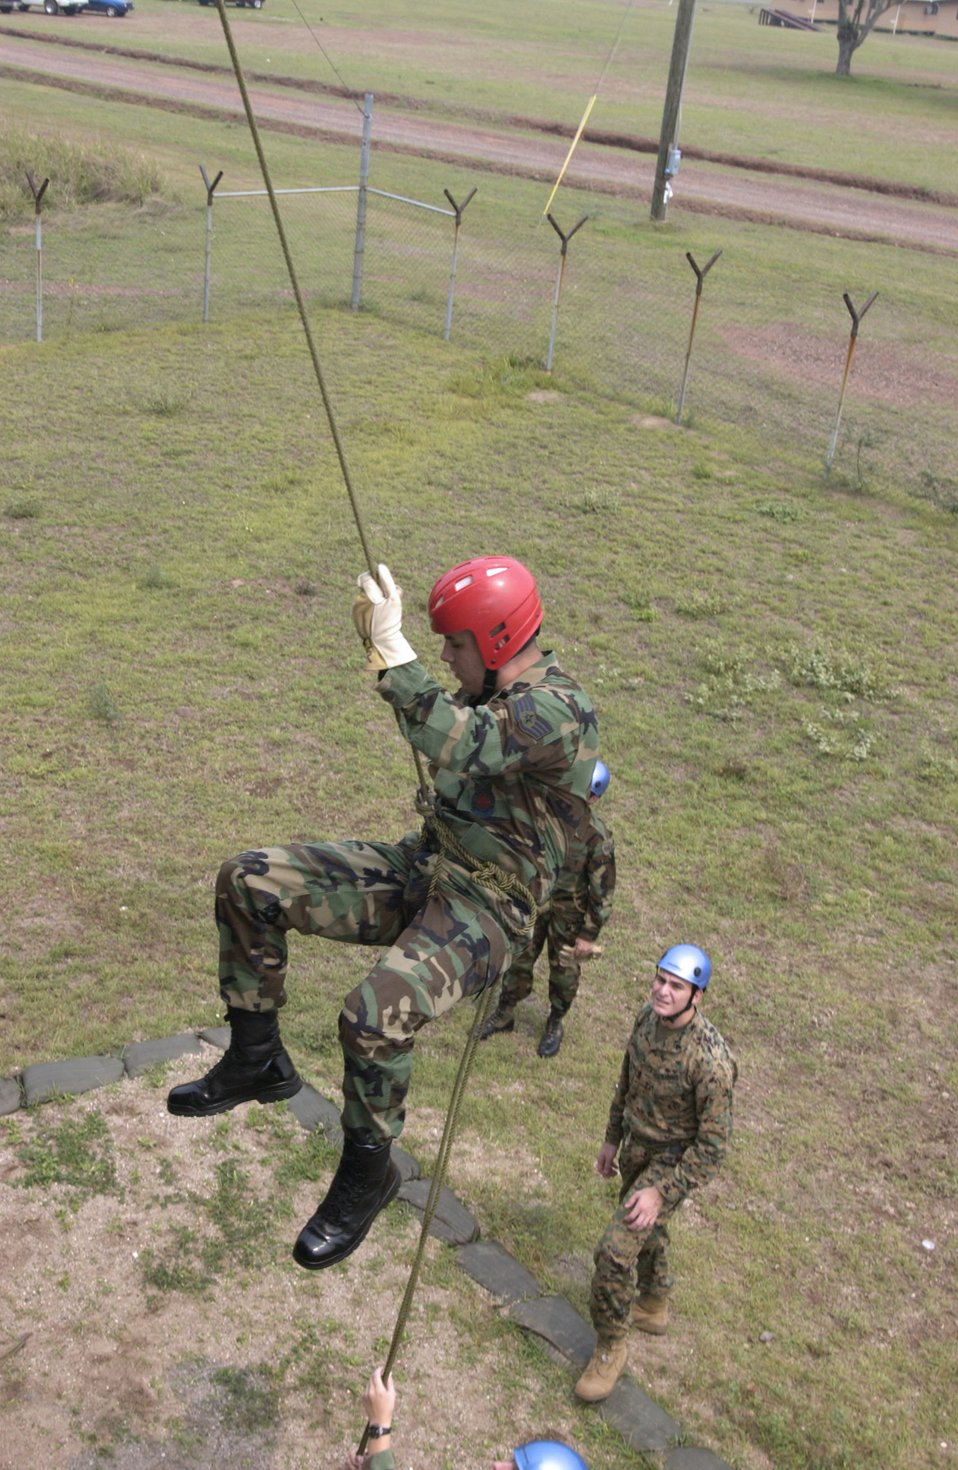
Volunteers provide search and rescue for Central America

SOTO CANO AIR BASE, Honduras -- Staff Sgt. John Deese rappels during a search and rescue training exercise here May 3. Each week the SAR team conducts different training exercises to prepare for operations throughout Central America. The team is Army run, but relies heavily on Airmen and Marines to ensure mission success. Sergeant Deese is a crew chief with the base fire department.